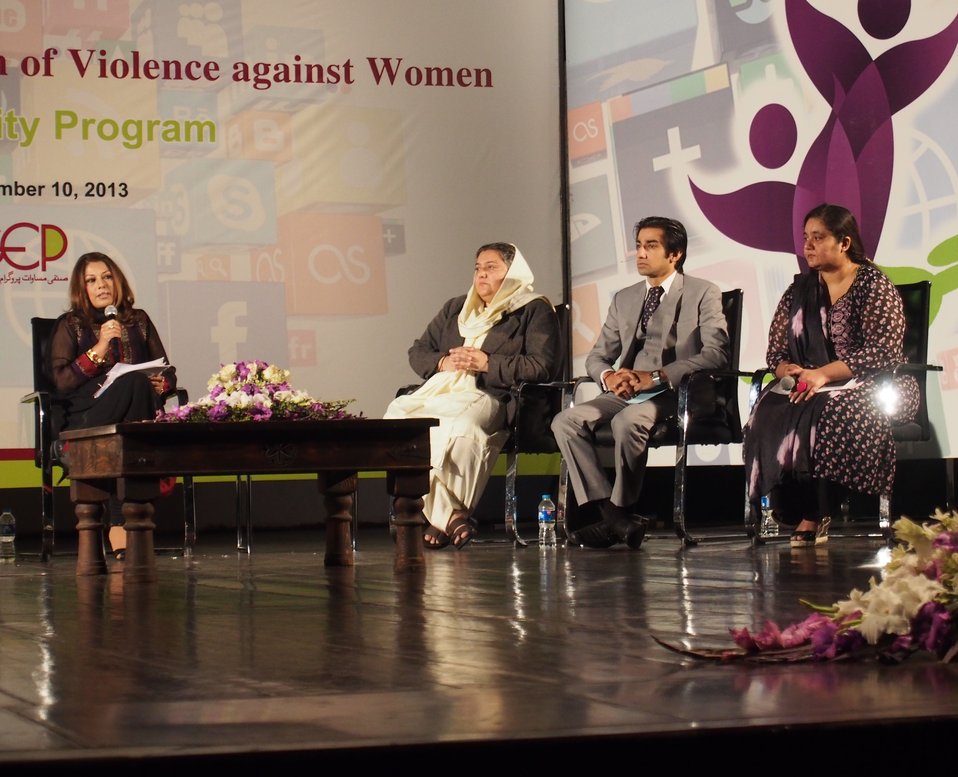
Social Media Event

OLYMPUS DIGITAL CAMERAParticipants at a United States funded panel discussion on cyber-bullying today condemned the rising trend of cyber-crime against women and said that large number of Pakistani girls and women are victims of this kind of violence, which mainly includes cyber-stalking, blackmailing and pornography. They said that due to existing social norms, women are more vulnerable to the negative aspects of information technology.

The panel discussion, titled “Social Media: New Dimension of Violence against Women,” was part of the 16 Days of Activism campaign about violence against women. It took place at the Pakistan National Council of Arts and was sponsored by Aurat Foundation’s Gender Equity Program (GEP), which is funded by the United States government through U.S. Agency for International Development (USAID).